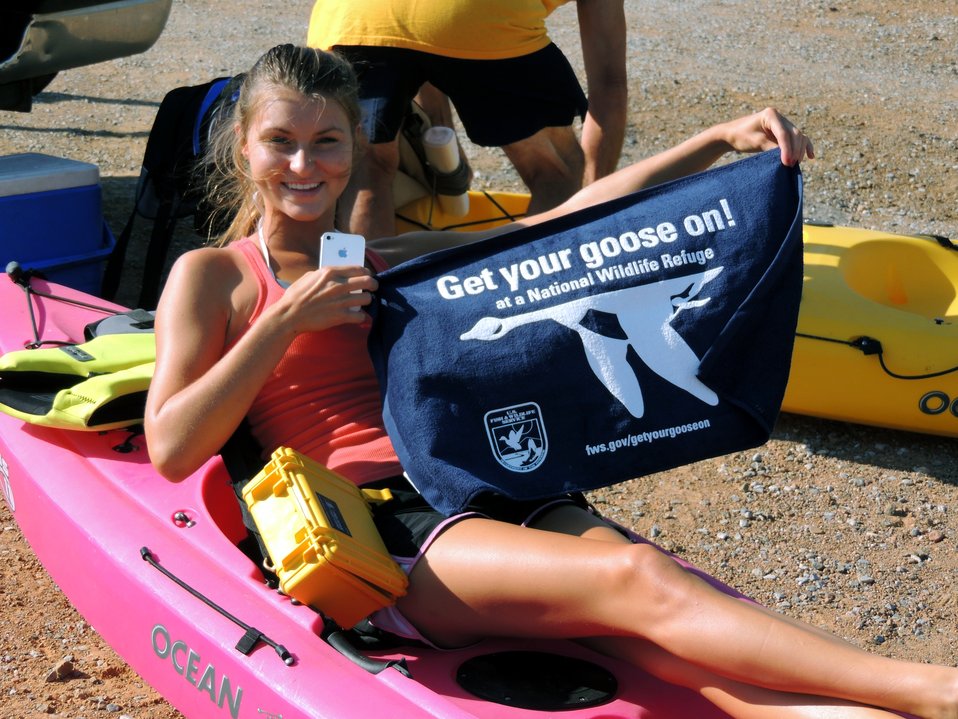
Get Your Goose On!

Wichita Mountains National Wildlife Refuge in Oklahoma.